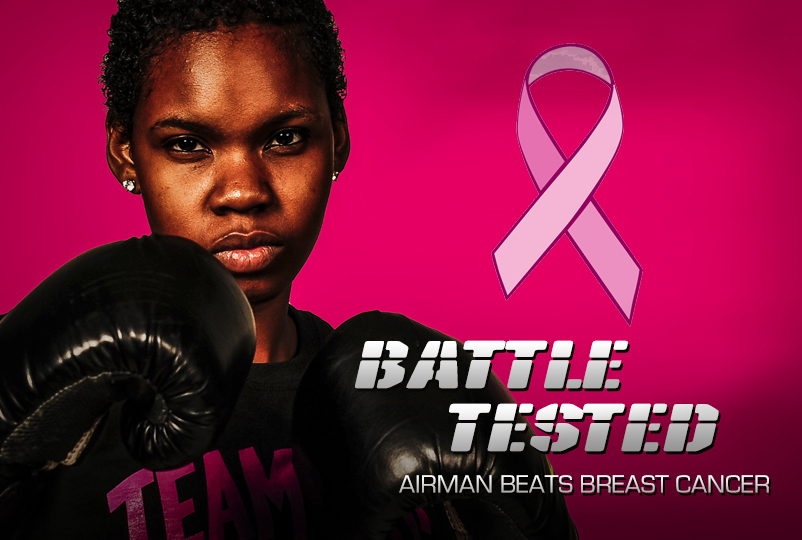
Battle Tested